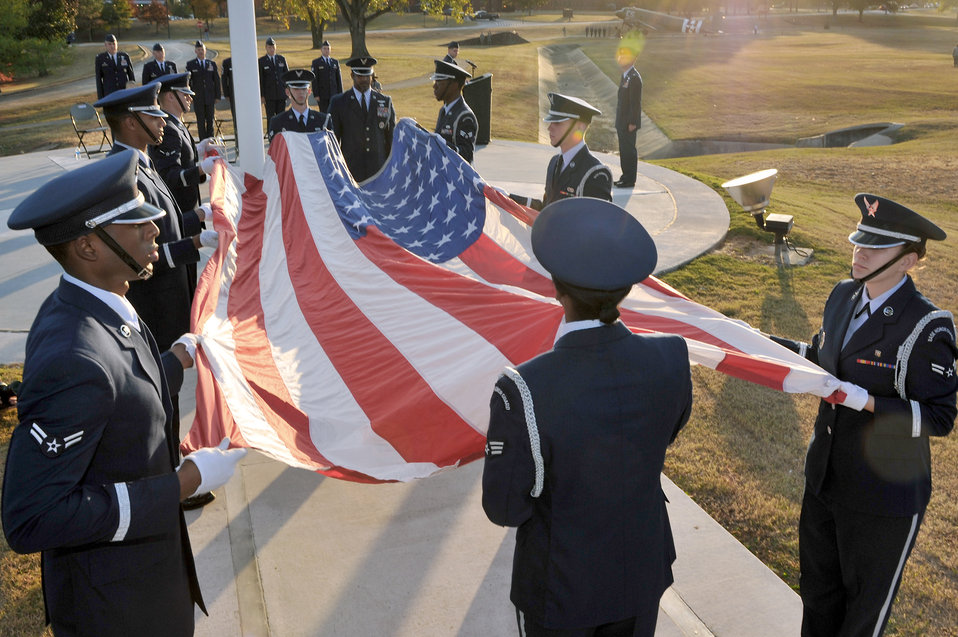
Veterans Day retreat ceremony

Honor guard members at Little Rock Air Force Base, Ark., fold Old Glory at the Veterans Day retreat ceremony Nov. 10, 2010. The retreat ceremony served a two-fold purpose, signifying both the end of the official duty day, and providing an opportunity to pay respect to the nation's veterans.